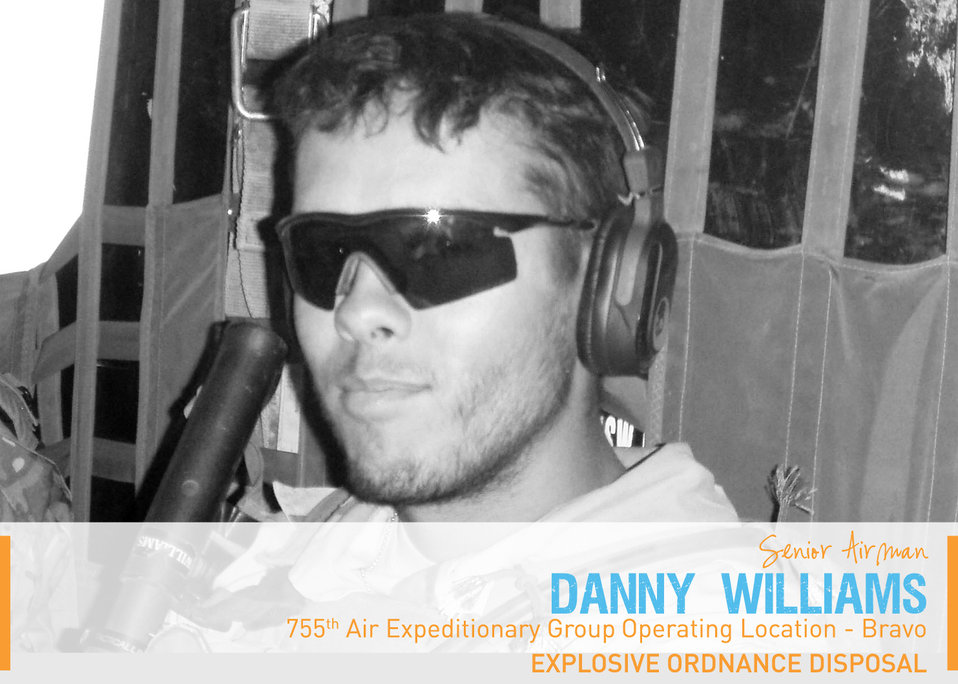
Portraits in Courage Vol 4: Senior Airman Danny Williams, explosive ordnance disposal, 755th Air Expeditionary Group, Operating Location Bravo. He